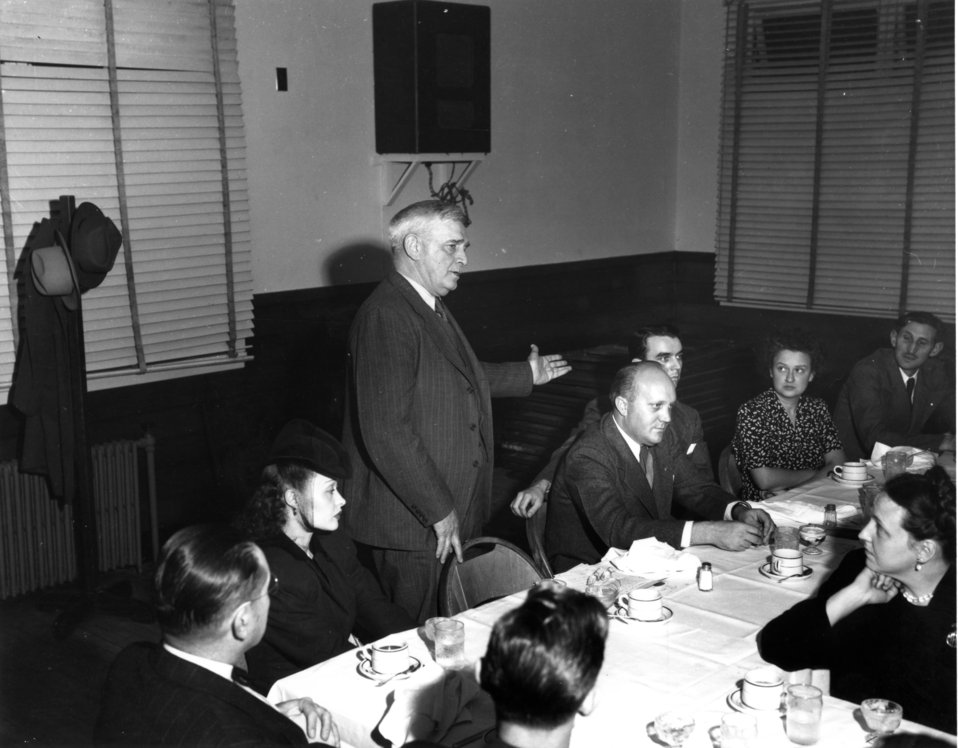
Notable persons at Oak Ridge